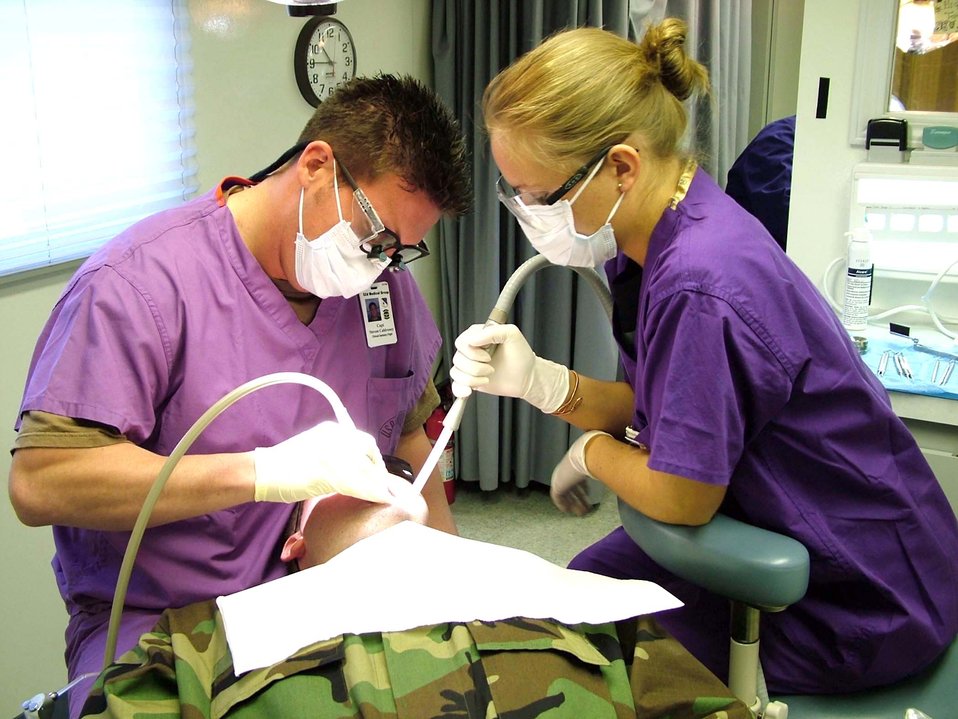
Mobile dental bus helps drive away plaque

BUECHEL AIR BASE, Germany -- Staff Sgt. Joseph Toth gets a tooth filled by Capt. (Dr.) Steven Caldroney and Airman 1st Class Terah Murphy during their spring visit here May 12. The 52nd Dental Squadron's dental bus from Spangdahlem Air Base visits four geographically separated unit sites in three countries twice a year. Sergeant Toth is an emergency actions controller with the 702nd Munitions Support Squadron command post.